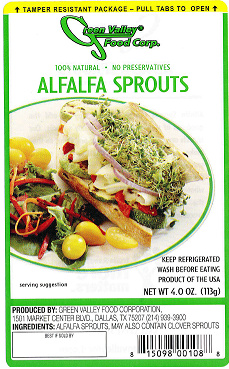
RECALLED - Sprouts

December 31, 2011 - RECALL Green Valley Food Corp. is Expanding Its Recall to Include Additional Products Because of a Possible Health Risk.